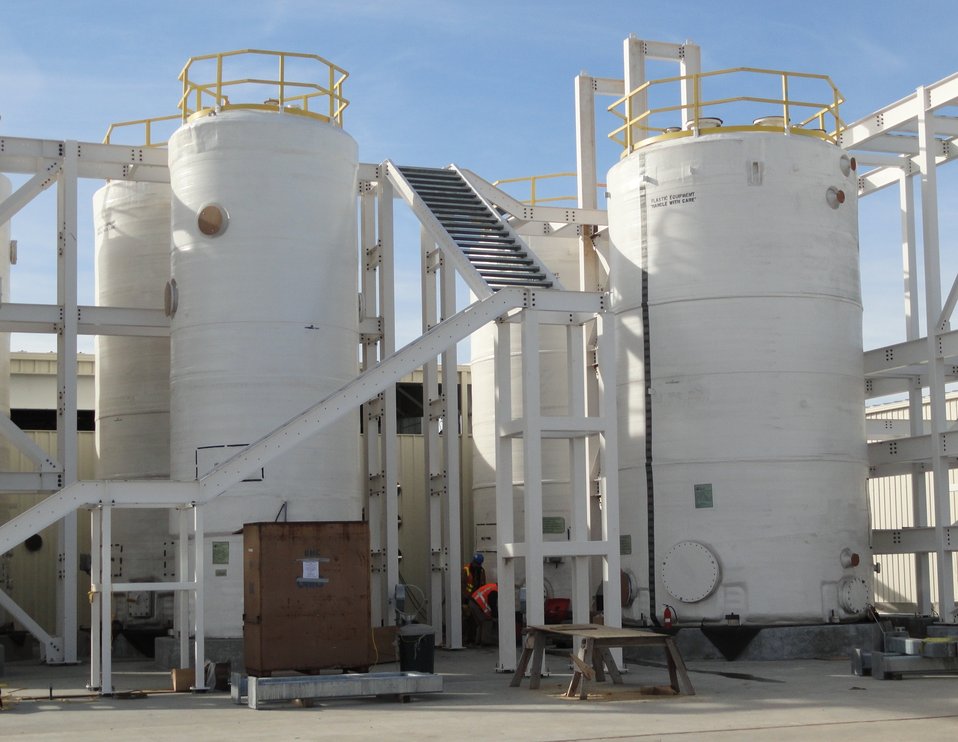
Richland - CH2M-HILL

Structural steel and large treatment tanks are in place for the 200 West Groundwater Treatment Facility. CH2M HILL is constructing the facility with Recovery Act funds to expand treatment of groundwater contamination at the Hanford Site.